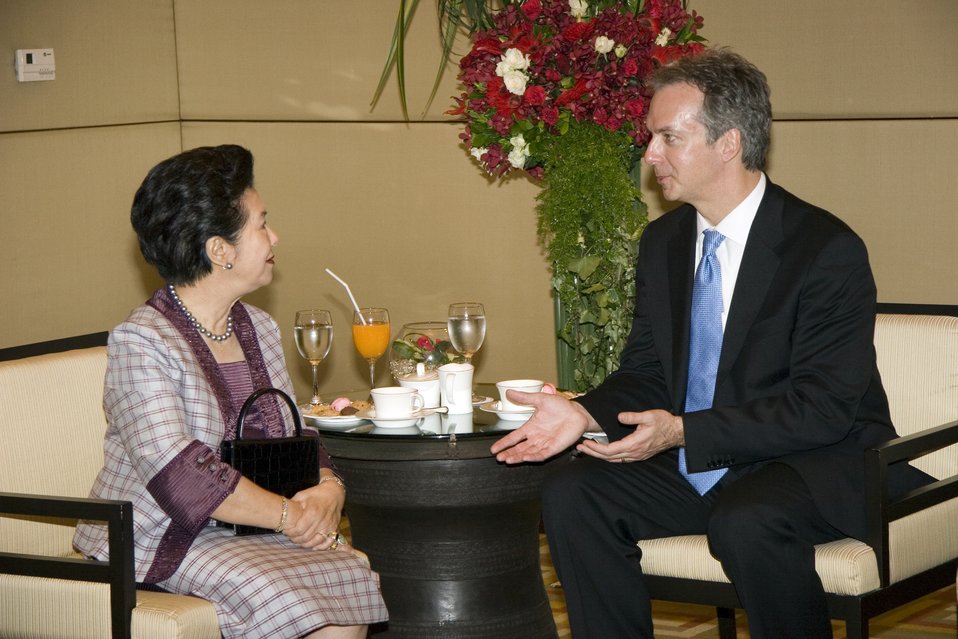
U.S. Ambassador to Thailand Meets With Thai Queen’s Lady-in-Waiting

U.S. Ambassador to Thailand Eric G. John meets with the Queen’s Lady-in-Waiting, Thanpuying Nravadi Chaixanien, at the Conrad Hotel in Bangkok, Thailand July 21, 2009.